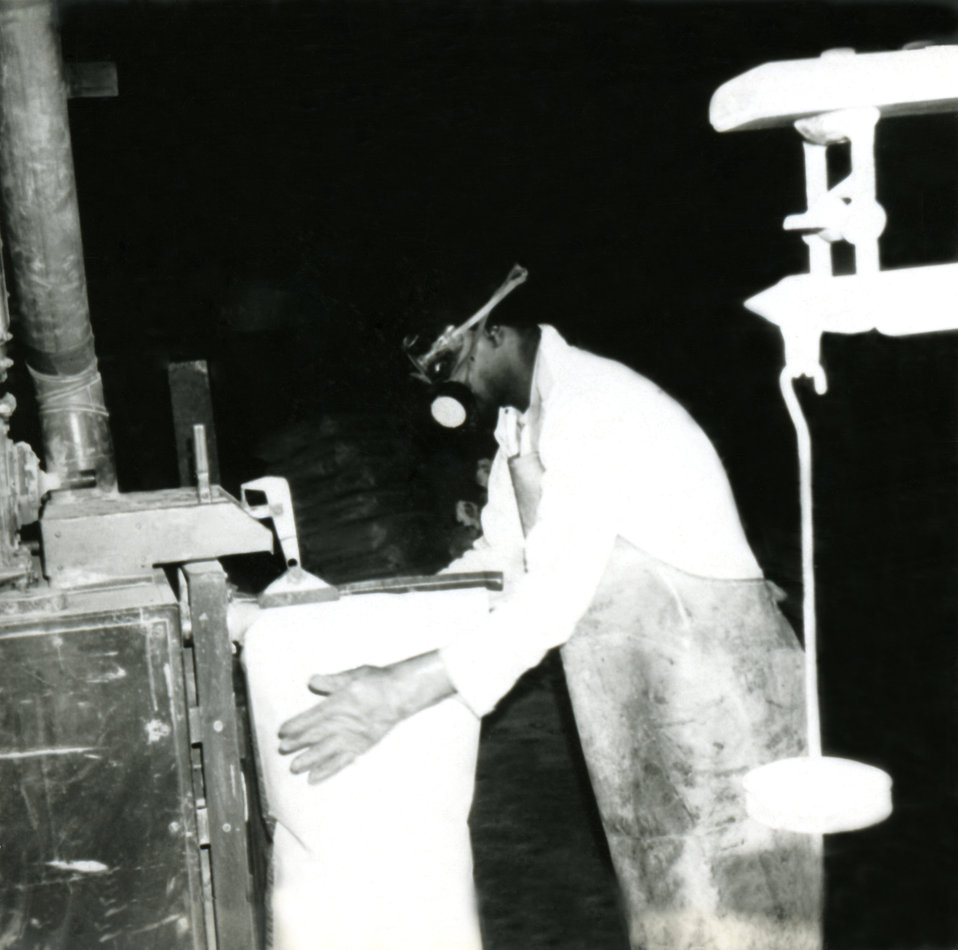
This 1950s historical photograph was provided by the Center for Disease Control's (CDC), National Institute for Occupational Safety and Health (NIOSH). The worker shown in this image was in the process of 'formulating', or mixing chemical pesticide, which obviously, was a task with a the potential for overexposure or poisoning. The man was wearing a respirator and rubber gloves, in order to prevent, as much as possible, contact between these toxic agents and his skin. Tasks such as this need stringent oversight by a regulating body such as NIOSH, which would make the health and welfare of such workers a paramount concern.